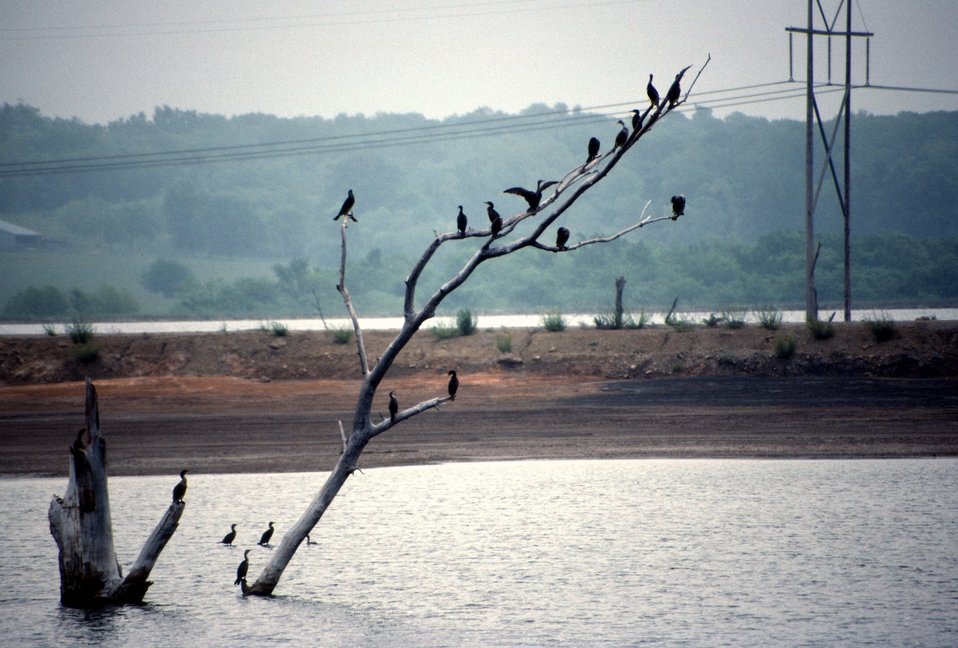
Cormorant Rookery